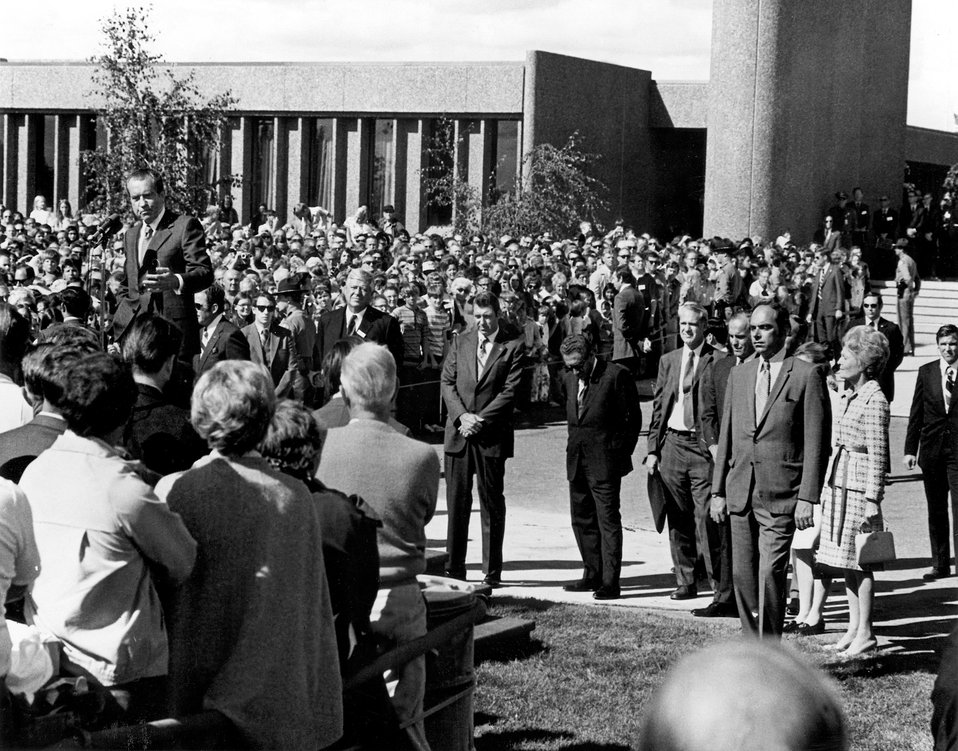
On September 26, 1971 President Nixon visited the AEC's Hanford site and used the occasion to announce that he was authorizing a second breeder reactor demonstration plant to be built on a cooperative AEC-industry basis.